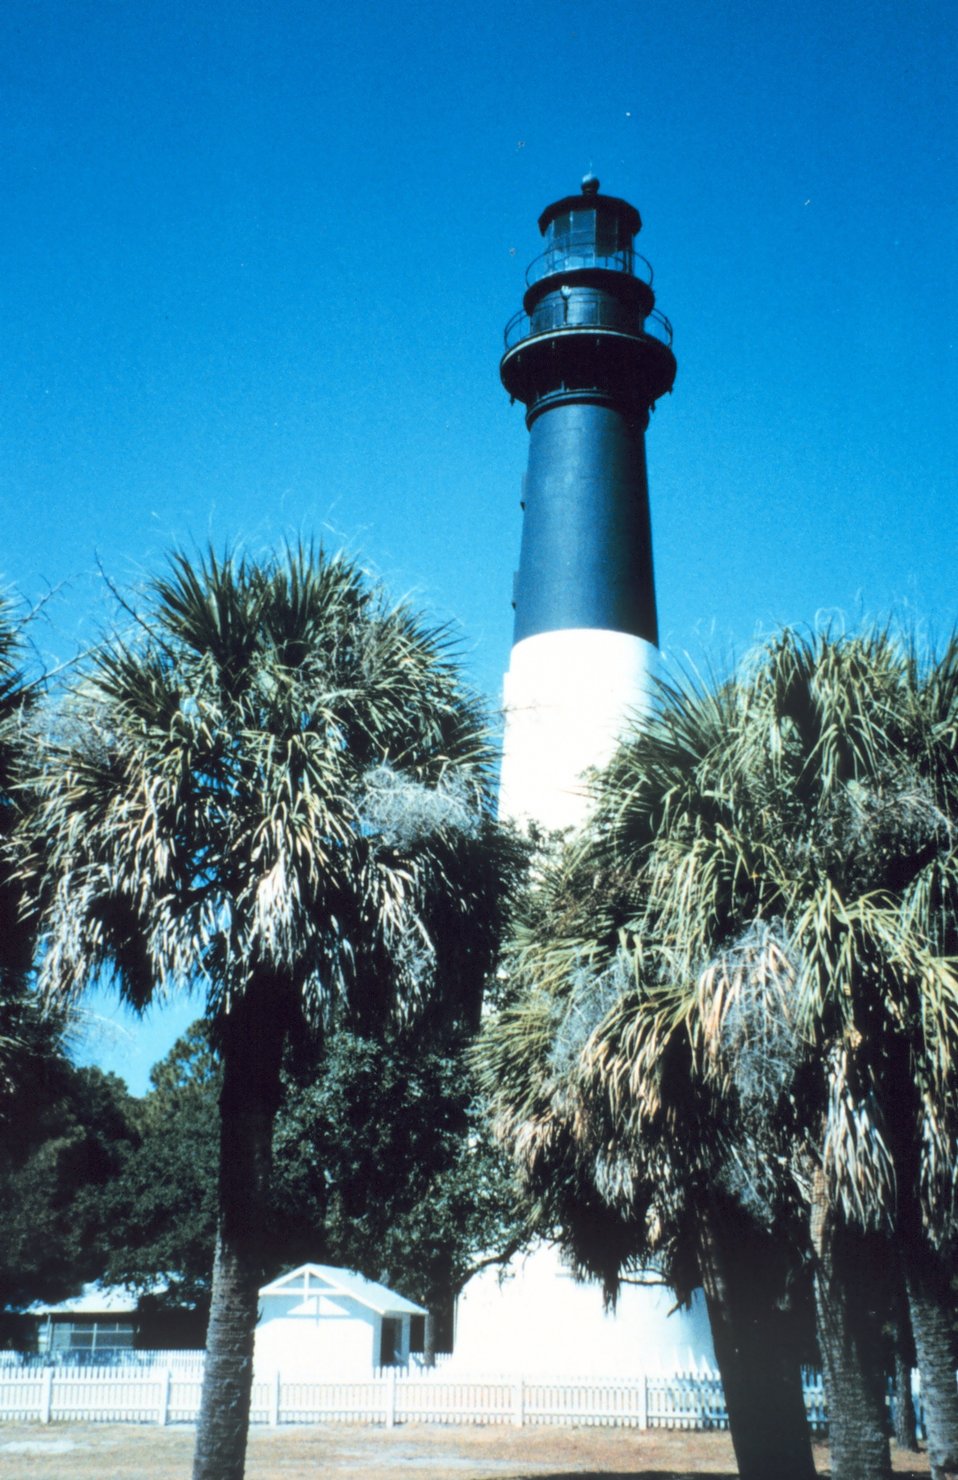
Hunting Island Lighthouse and palmetto trees